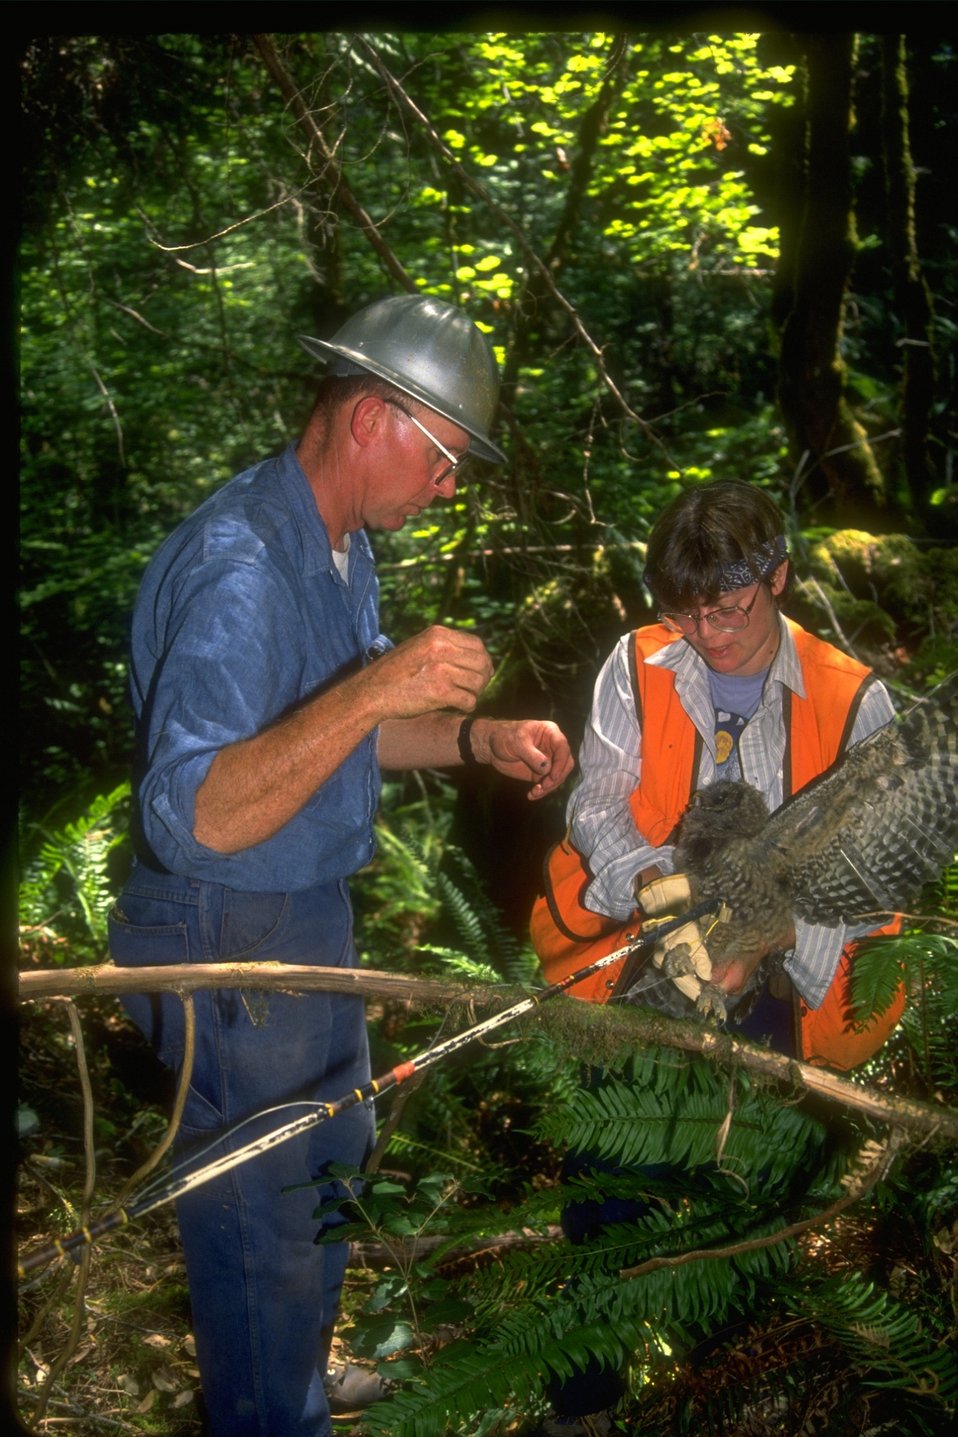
Frank Oliver and a volunteer working with an owl.